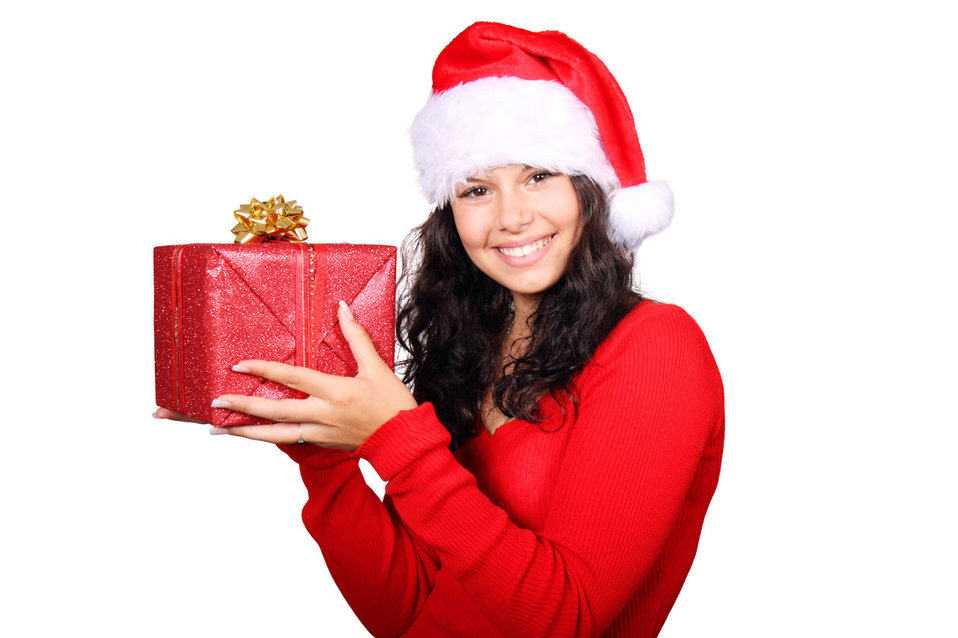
Santa holding christmas gift

Santa holding a red christmas gift.